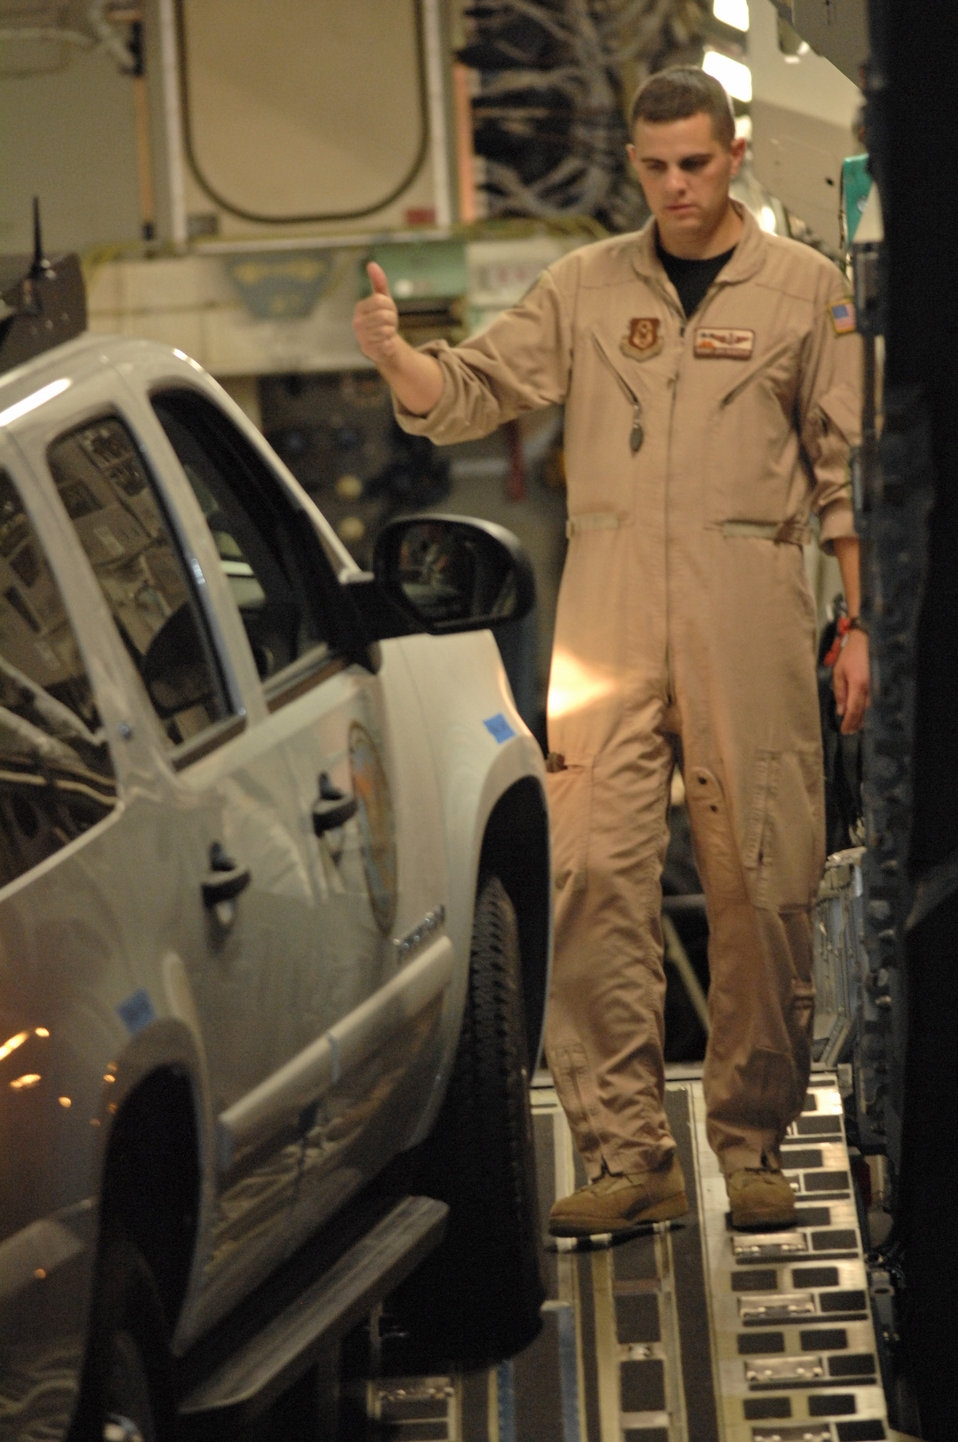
Airmen deliver firefighting support

Master Sgt. Jim Madrid helps unload U.S. Army North emergency response equipment from a C-17 Globemaster III Oct. 24 at March Air Reserve Base, Calif. Soldiers from U.S. Army North are assisting with Southern California wildfires by managing and aiding all the Defense Department forces involved. Sergeant Madrid is assigned to the 729th Airlift Squadron stationed at March ARB.